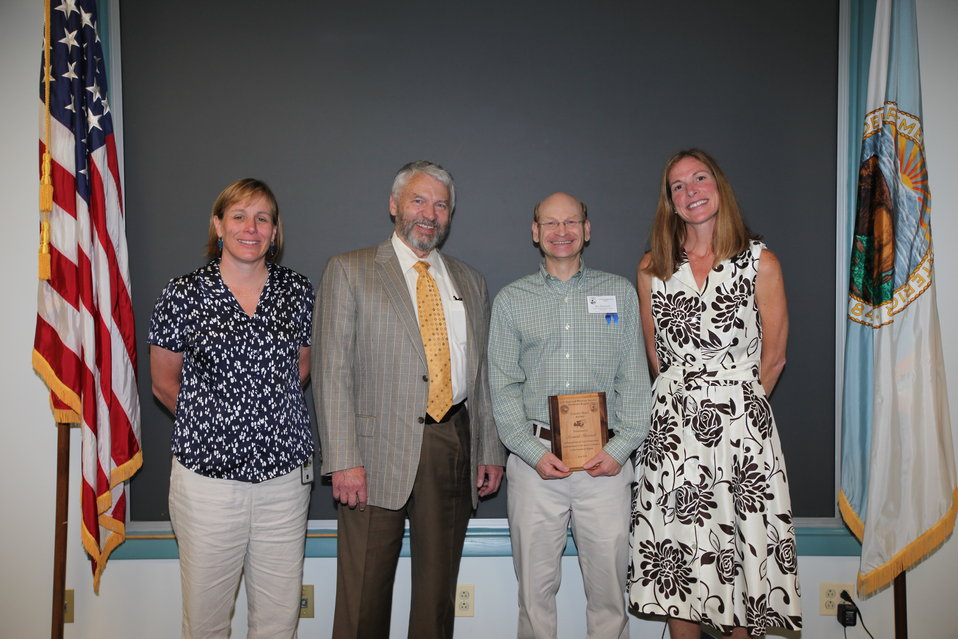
Kenneth Brownell from Engineering and Fisheries, recieved a Region 5 Unsung Hero Adward.
From left to right: Deputy Regional Director Deb Rocque, Deputy Director Rowan Gould, Kenneth Brownell and Regional Director Wendi Weber